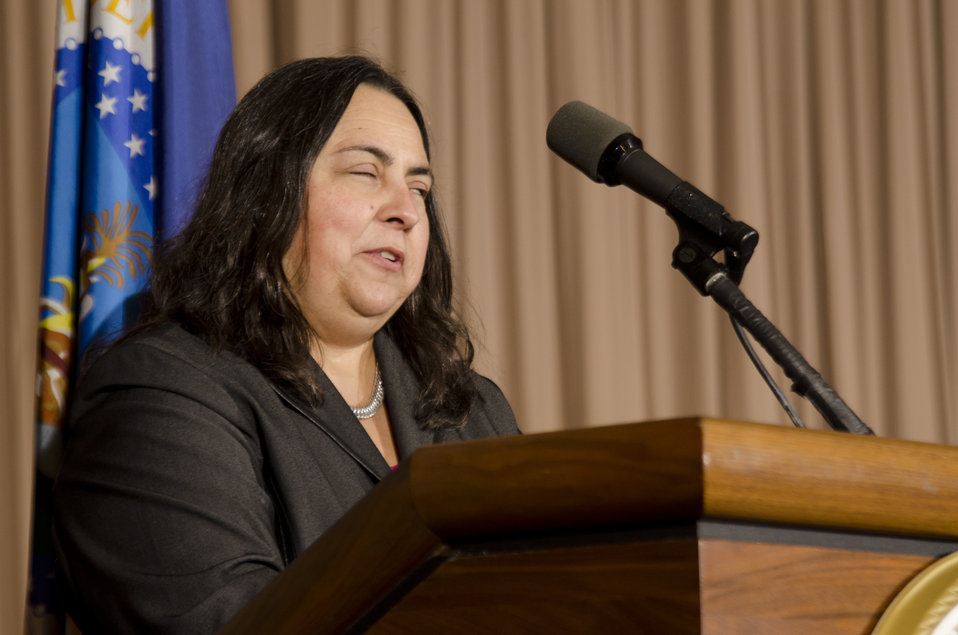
United States Department of Labor Assistant Secretary for the Office of Disability Employment Policy Kathy Martinez addresses the Work Force Recruitment Program’s (WRP) 'Your Key To Hiring Student Interns and Employees with Disabilities” event hosted by the United States Department of Agriculture (USDA) in the Jefferson Auditorium, Washington, D.C. on Tuesday, February 7, 2012.